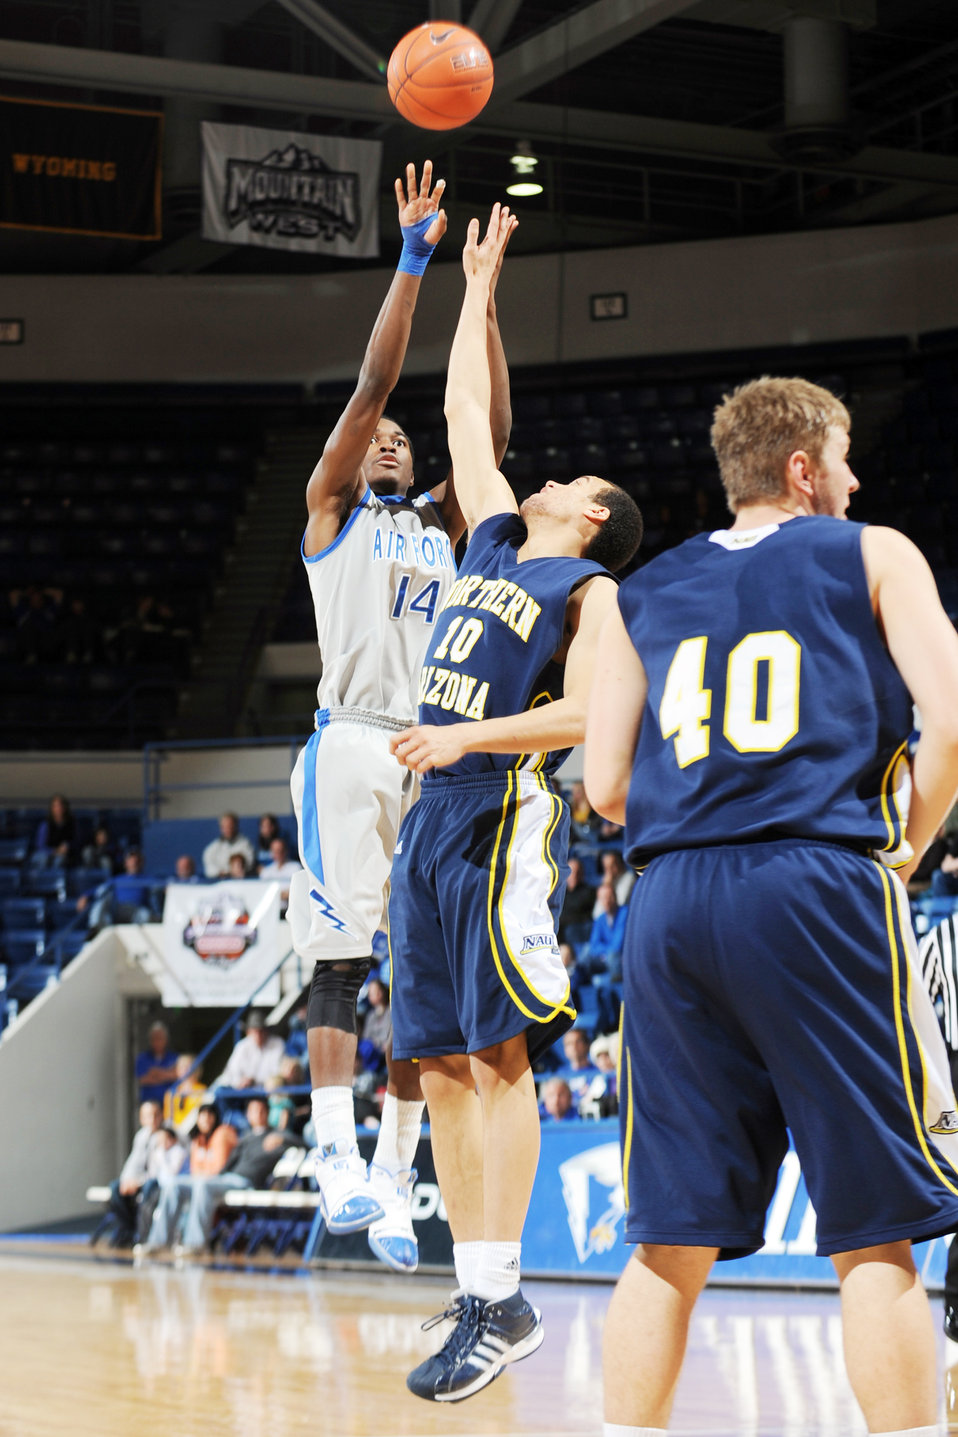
Falcons vs Northern Arizona

Falcon freshman guard Michael Lyons takes a jumpshot as Lumberjack Cameron Jones tries to block his shot during the Falcons' game against Northern Arizona at the U.S. Air Force Academy's Clune Arena Dec. 19, 2009. Air Force lost the game 60-52.